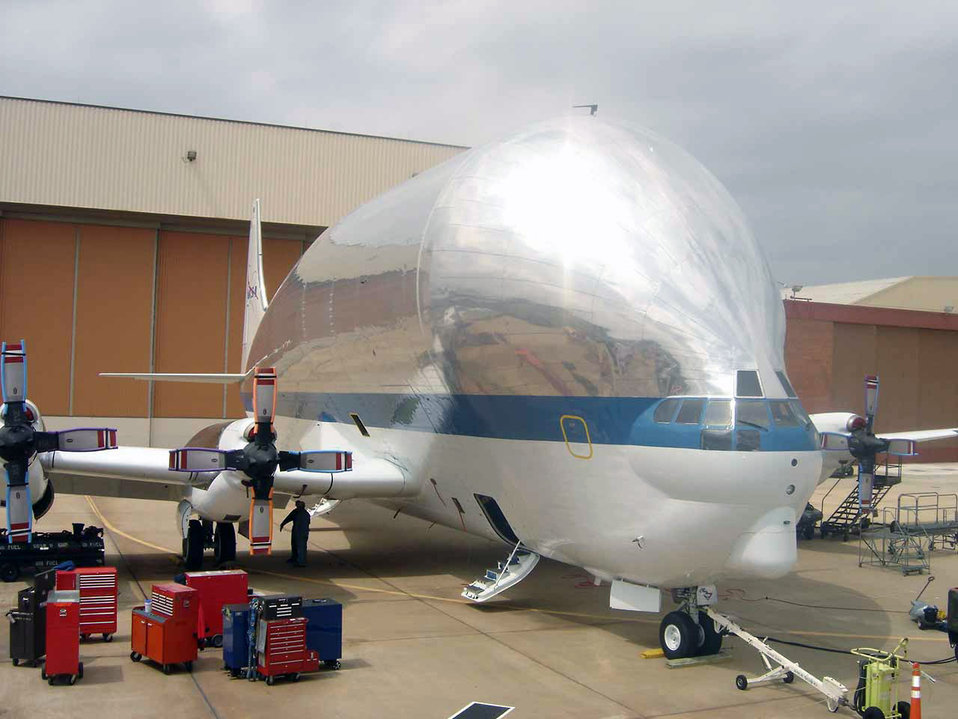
Inspecting the Super Guppy

NASA's Super Guppy sits at Tinker Air Force Base, Okla., where it waits for a maintenance inspection by Air Force specialists. Project planners say the work should be completed by Aug. 22. NASA officials brought the unique aircraft to Tinker AFB because of the capability of Tinker's workforce to inspect and repair the large aircraft.